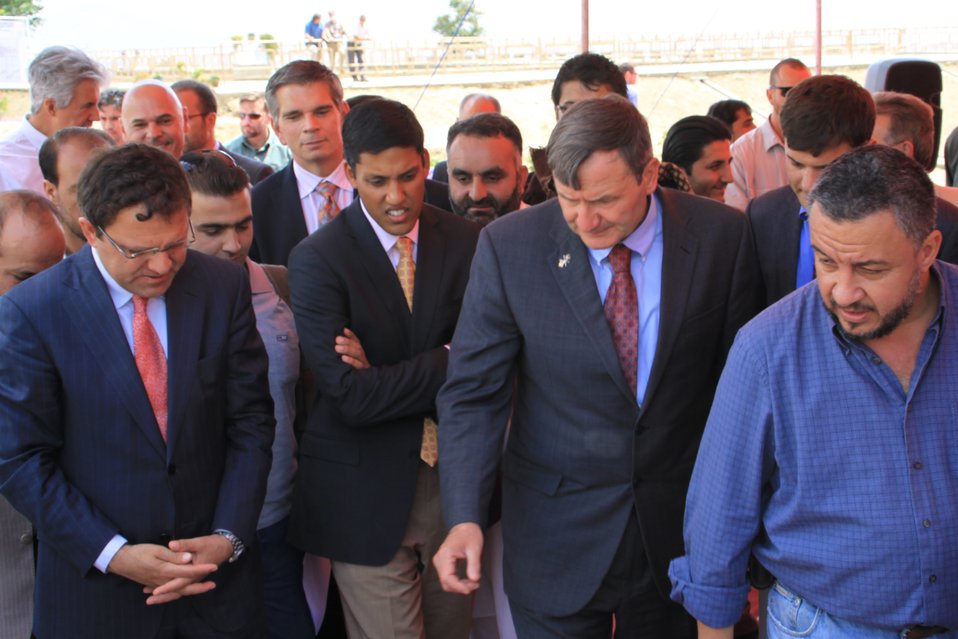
Baddam Bagh Farm